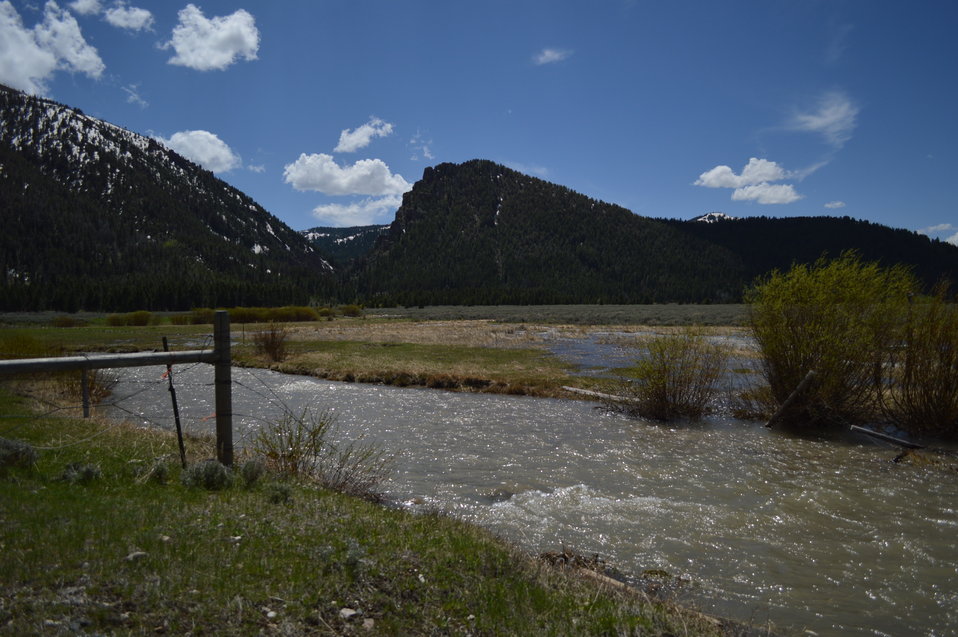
Regional Leadership Visit to Montana 2014